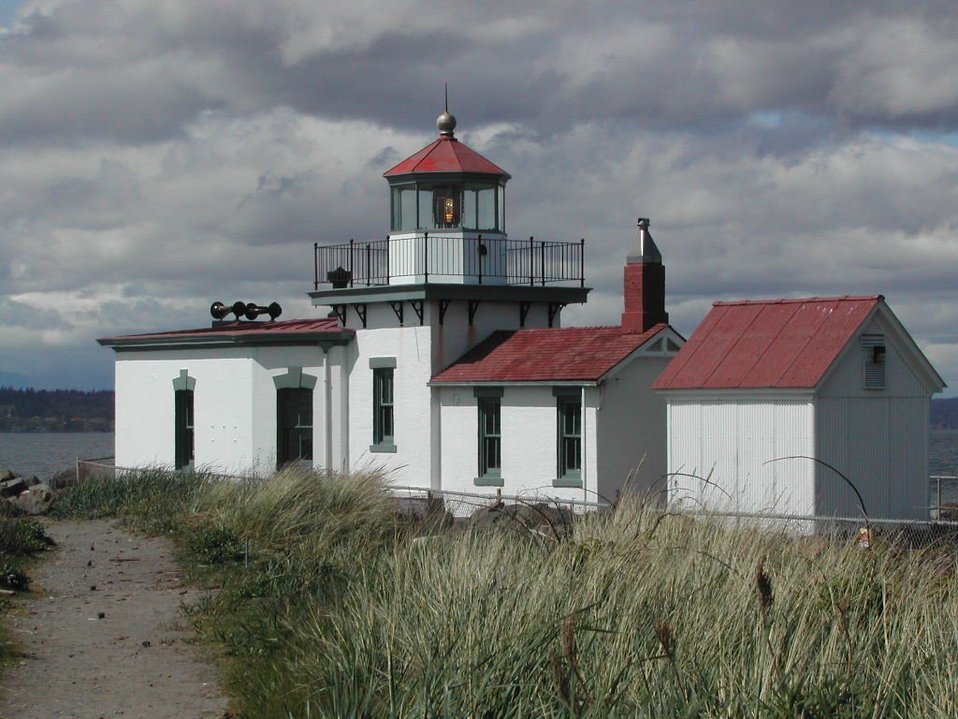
West Point Lighthouse